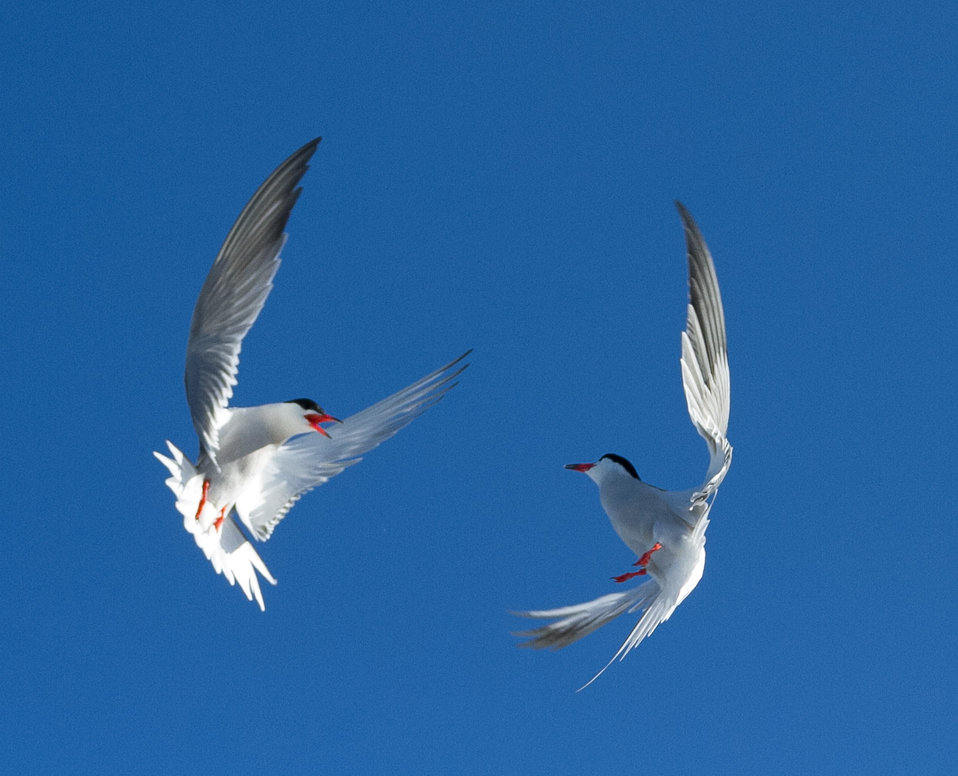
Common tern dance

Monomoy National Wildlife Refuge.